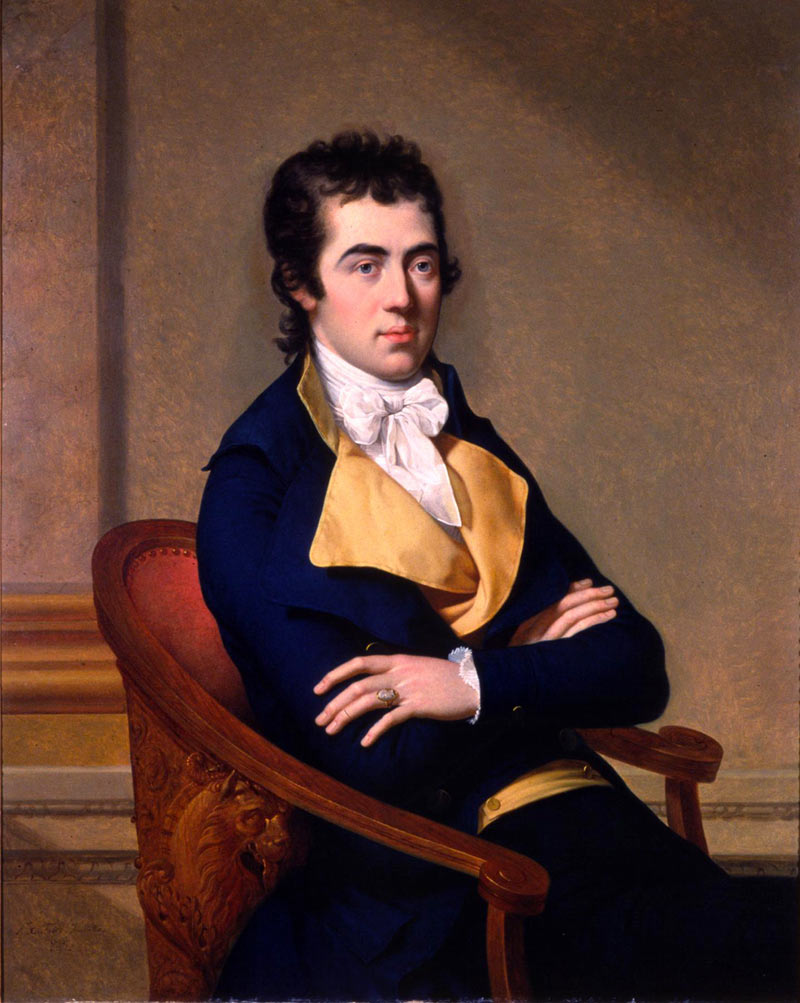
Henry Vassall-Fox 3rd Baron Holland (1795)